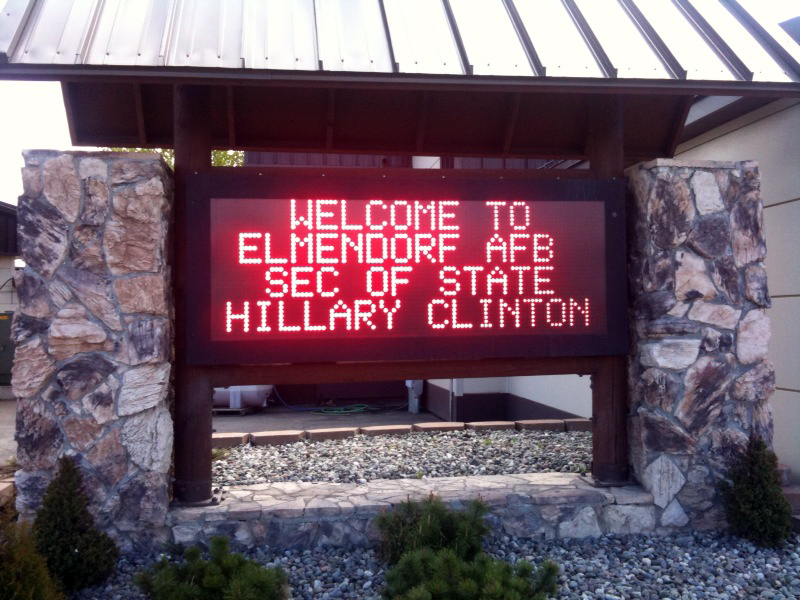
Behind the Scenes: USAF Welcomes Secretary Clinton to Alaska

Behind the Scenes: Elmendorf Air Force Base welcomes U.S. Secretary of State Hillary Rodham Clinton to Alaska while her plane refuels en route outbound to Asia on May 20, 2010.